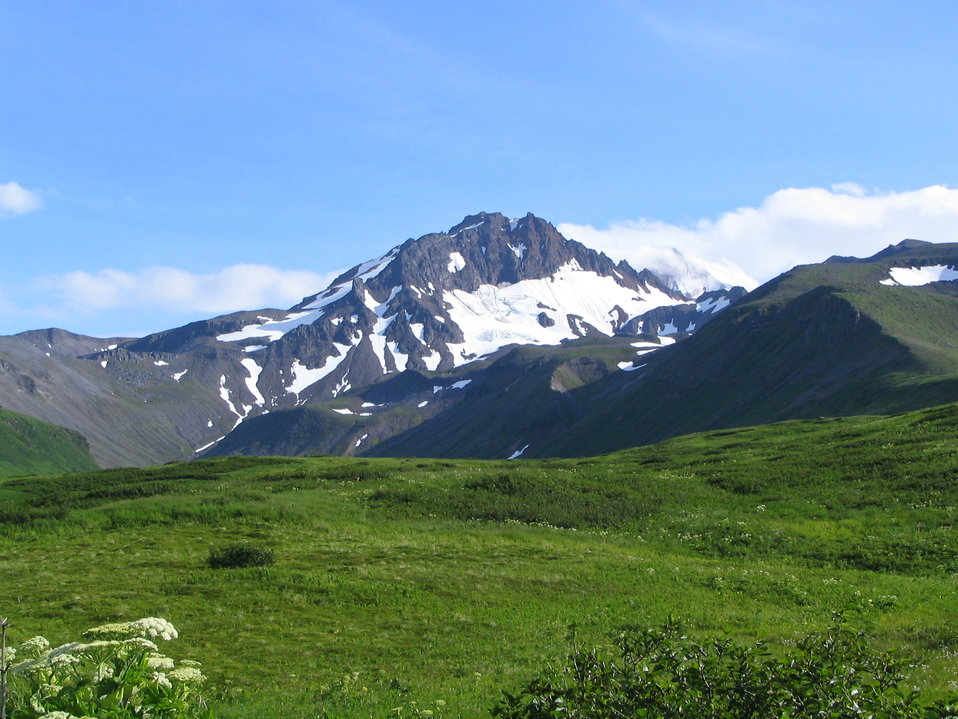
Frosty Peak

Izembek National Wildlife Refuge